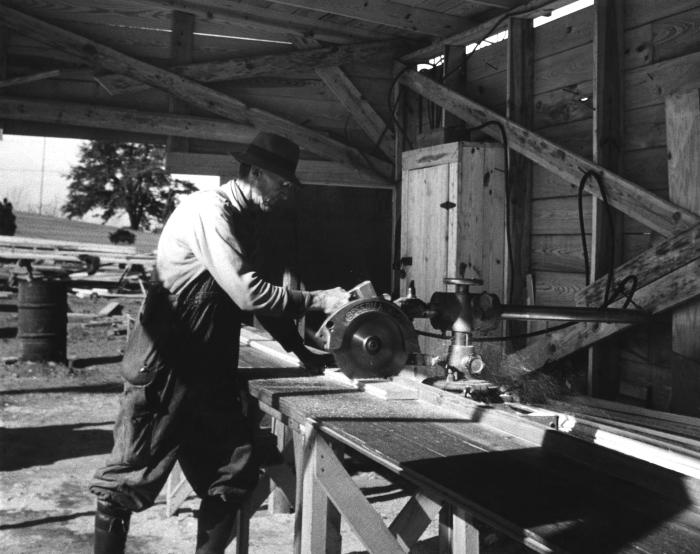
Provided by the Center for Disease Control's (CDC), National Institute for Occupational Safety and Health (NIOSH), this historic 1943 image depicted a male construction worker on a construction site in the process of using a table saw, in order to transect a wooden plank. Note that the man was wearing no protective filtered breathing mask, or gloves, however, he was wearing eyeglasses, though goggles would have been more applicable.